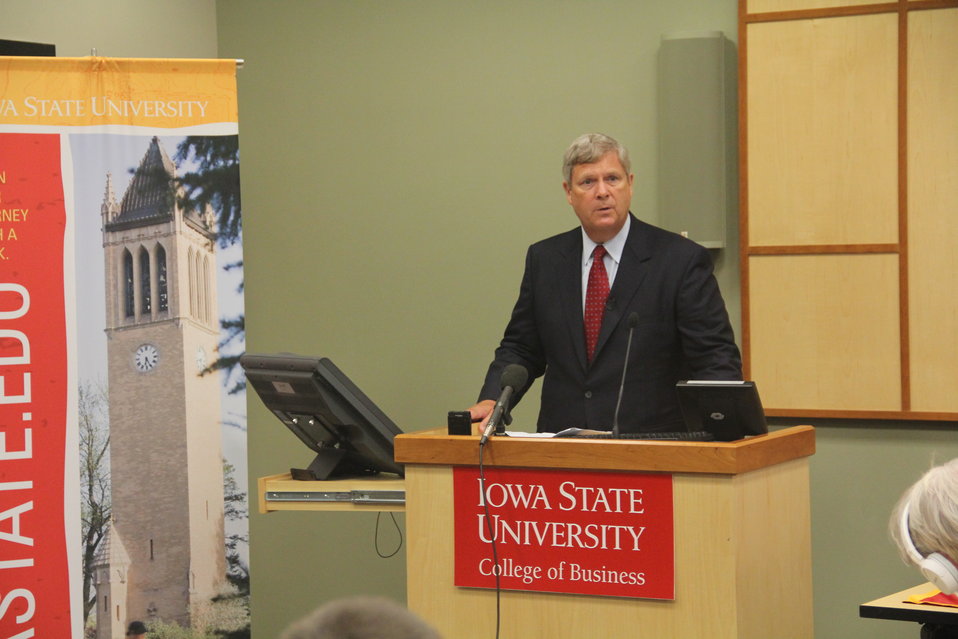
Agriculture Secretary Tom Vilsack hosts a roundtable discussion on immigration reform at Iowa State University in Des Moines, IA on Friday, Aug. 30, 2013.